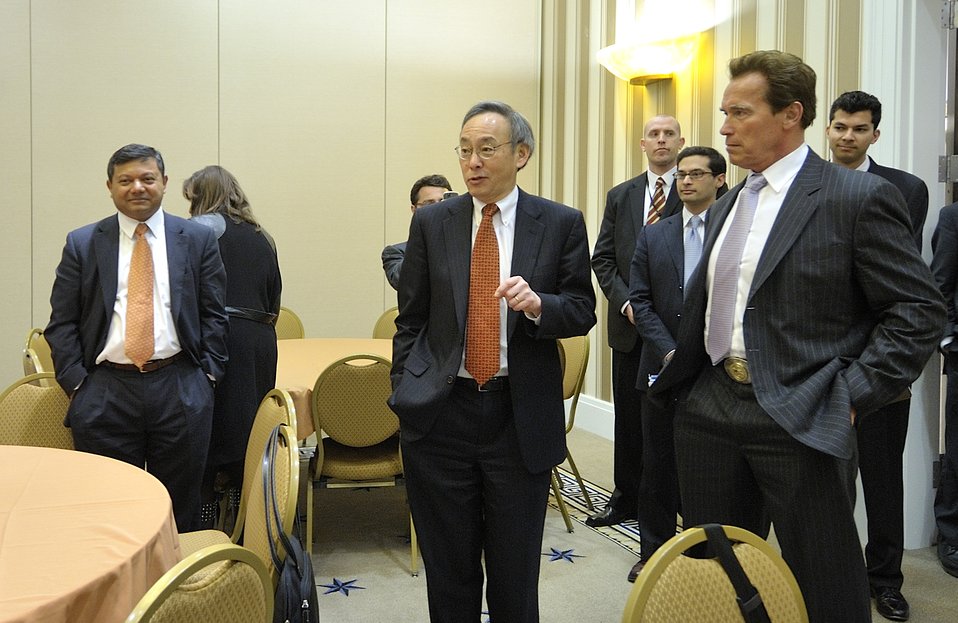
ARPA-E Energy Innovation Summit 2011, 6 of 83

Steven Chu, Secretary, United States Department of Energy along with Arun Majumdar, Director of ARPA-E, and Arnold Schwarzenegger, Former Governor of California surprise graduate students who traveled to the summit.